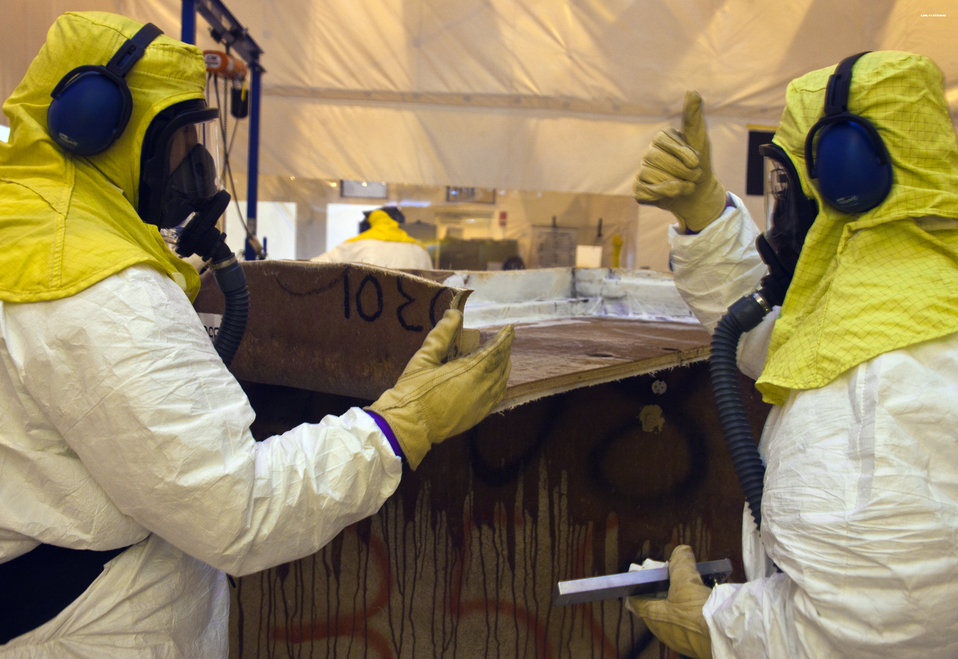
Los Alamos National Laboratory Ahead of Schedule Processing Waste in Large Boxes

Crews repackage waste from a fiberglass reinforced plywood box into a container that can be shipped to the Waste Isolation Pilot Plant.